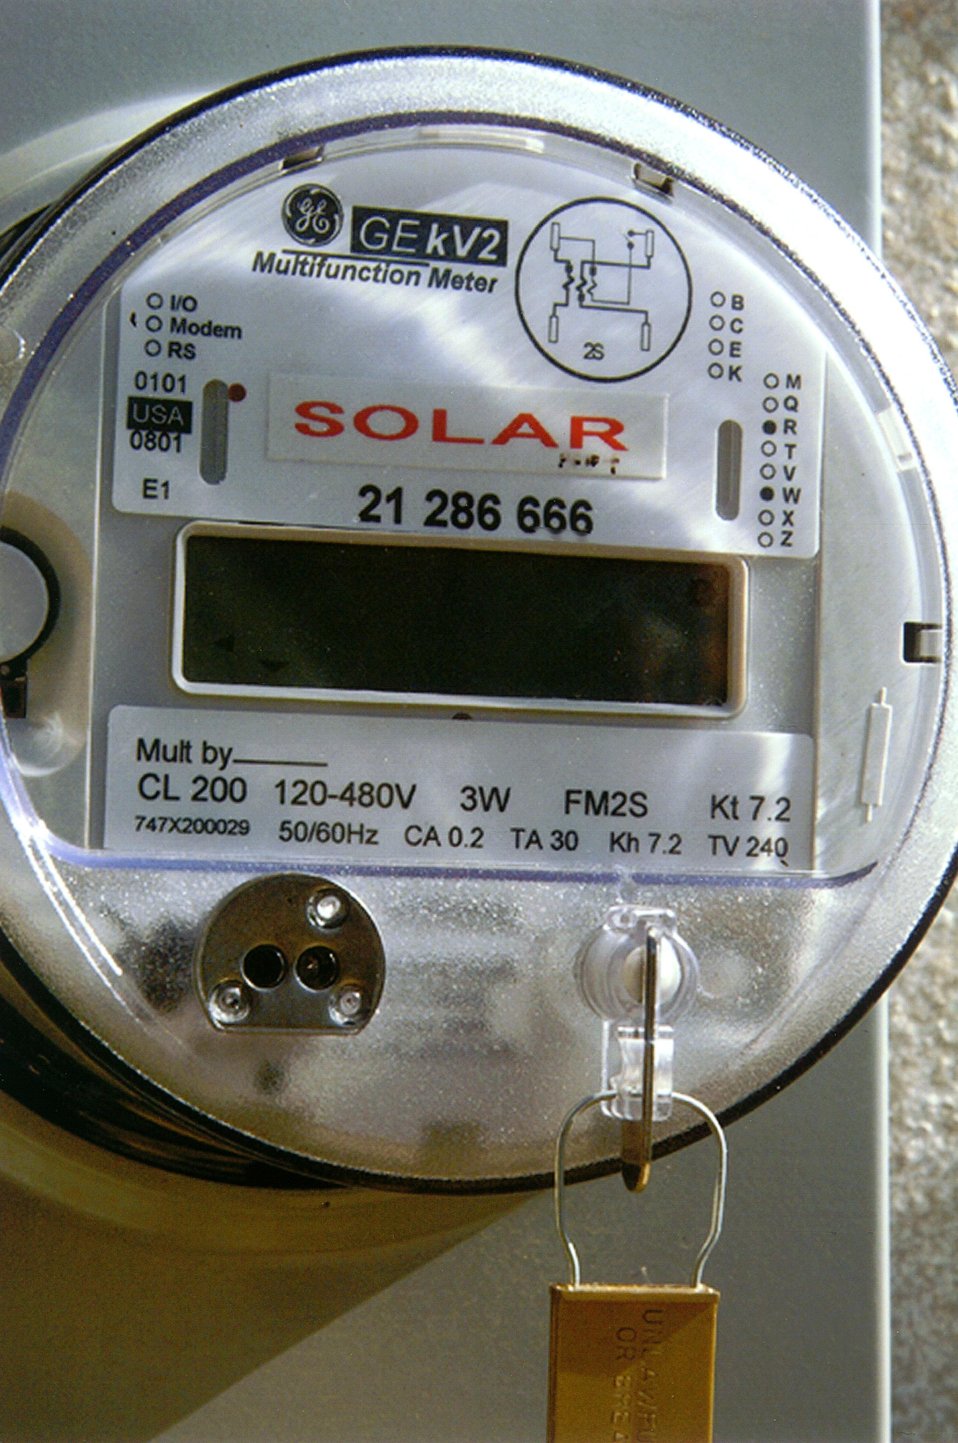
SOLAR METER ATTACHED TO SOLAR PATRIOT HOUSE.

THE SOLAR PATRIOT, A MODULAR HOME DISPLAYED ON THE NATIONAL MALL IN APRIL, 2001 AS PART OF THE SOLAR FORUM 2001, WAS PERMANENTLY INSTALLED IN NORTHERN VIRGINIA. THIS ZERO ENERGY HOME PRODUCES ALL THE ENERGY IT NEEDS FEATURING PHOTOVOLTAIC SYSTEMS, PASSIVE SOLAR DESIGNS, GEOTHERMAL HEAT PUMP, COMPACT FLUORESCENT LIGHTING AND HIGH EFFICIENCY APPLIANCES. IT IS CONNECTED TO THE ELECTRICITY GRID, BUT HAS THE CAPABILITY TO OPERATE AT LEAST 24 HOURS WITHOUT ELECTRICITY FROM THE UTILITY.